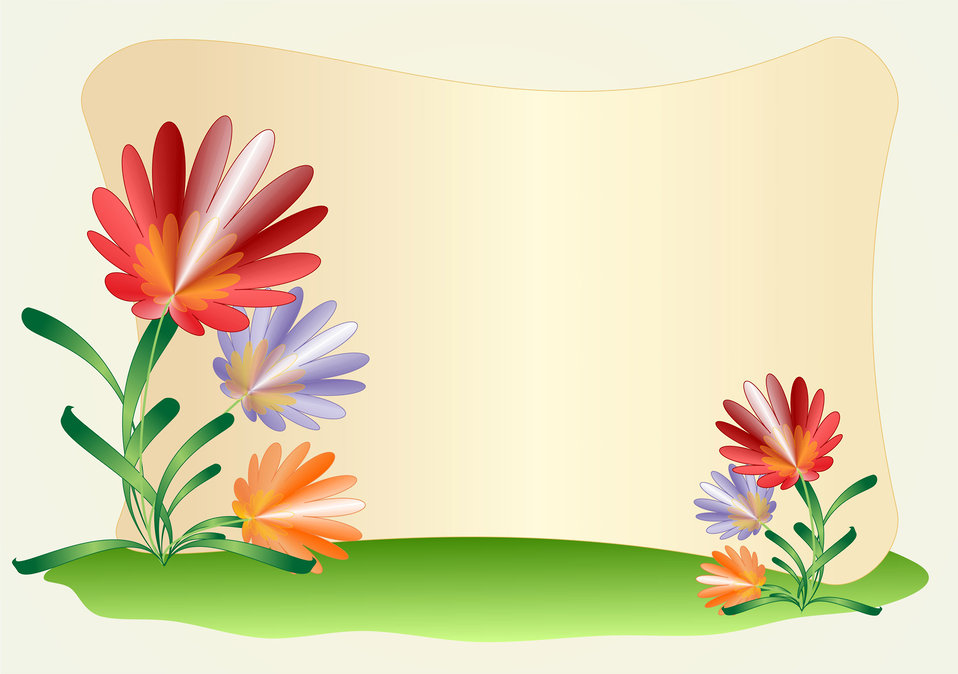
Background with flowers

Vector background for text with flowers.